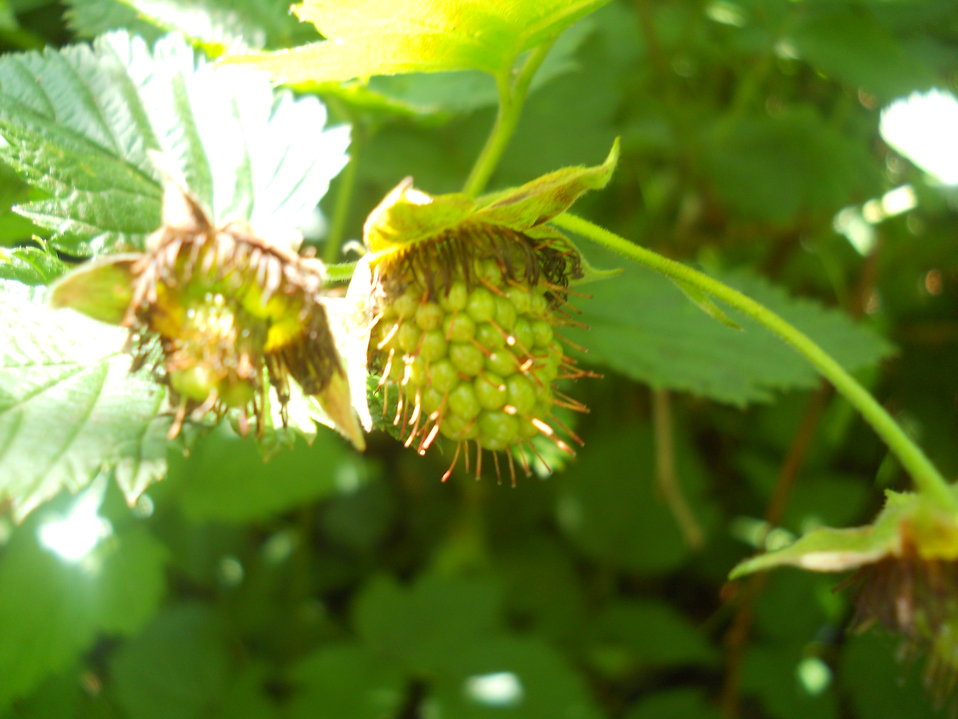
Immature Salmonberries

Credit: USFWS
Photo taken by a Salmon Camp participant during a nature photography activity.

Source and Contact: Kodiak National Wildlife Refuge